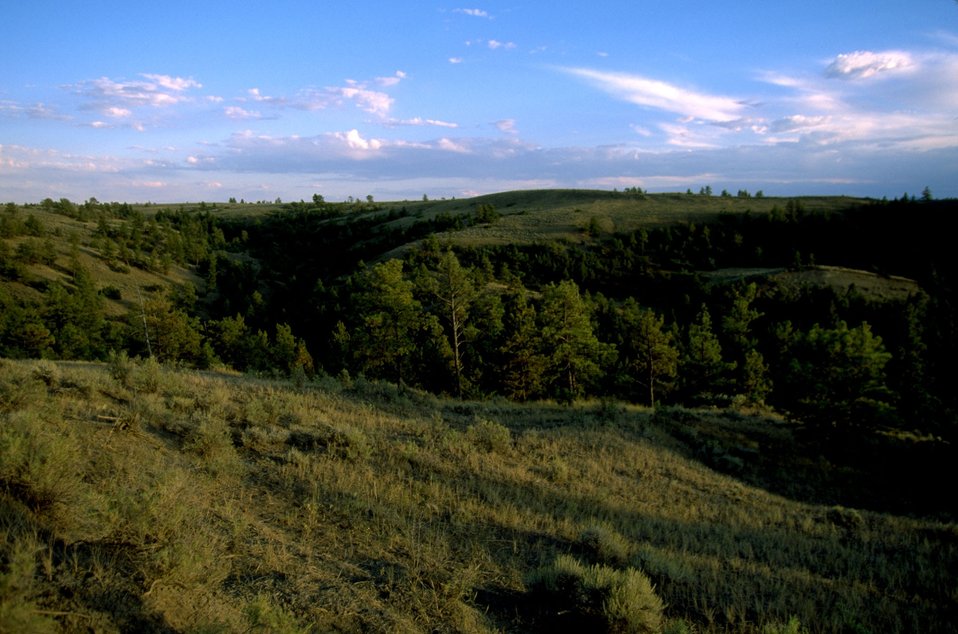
Missouri Breaks topography/scenery